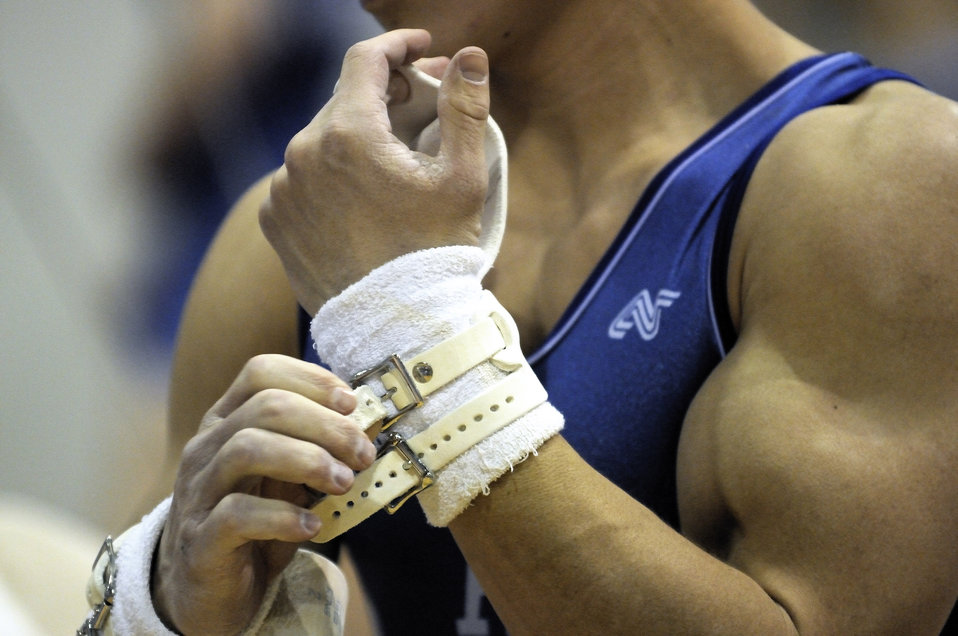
Airpower

U.S. Air Force Academy senior Josiah Loese prepares himself for the still ring competition during the annual Rocky Mountain Open Jan. 10 at the Academy in Colorado. The Falcons men's gymnastics team accounted for seven top-10 finishes as they placed third overall in the meet in front of a capacity crowd.